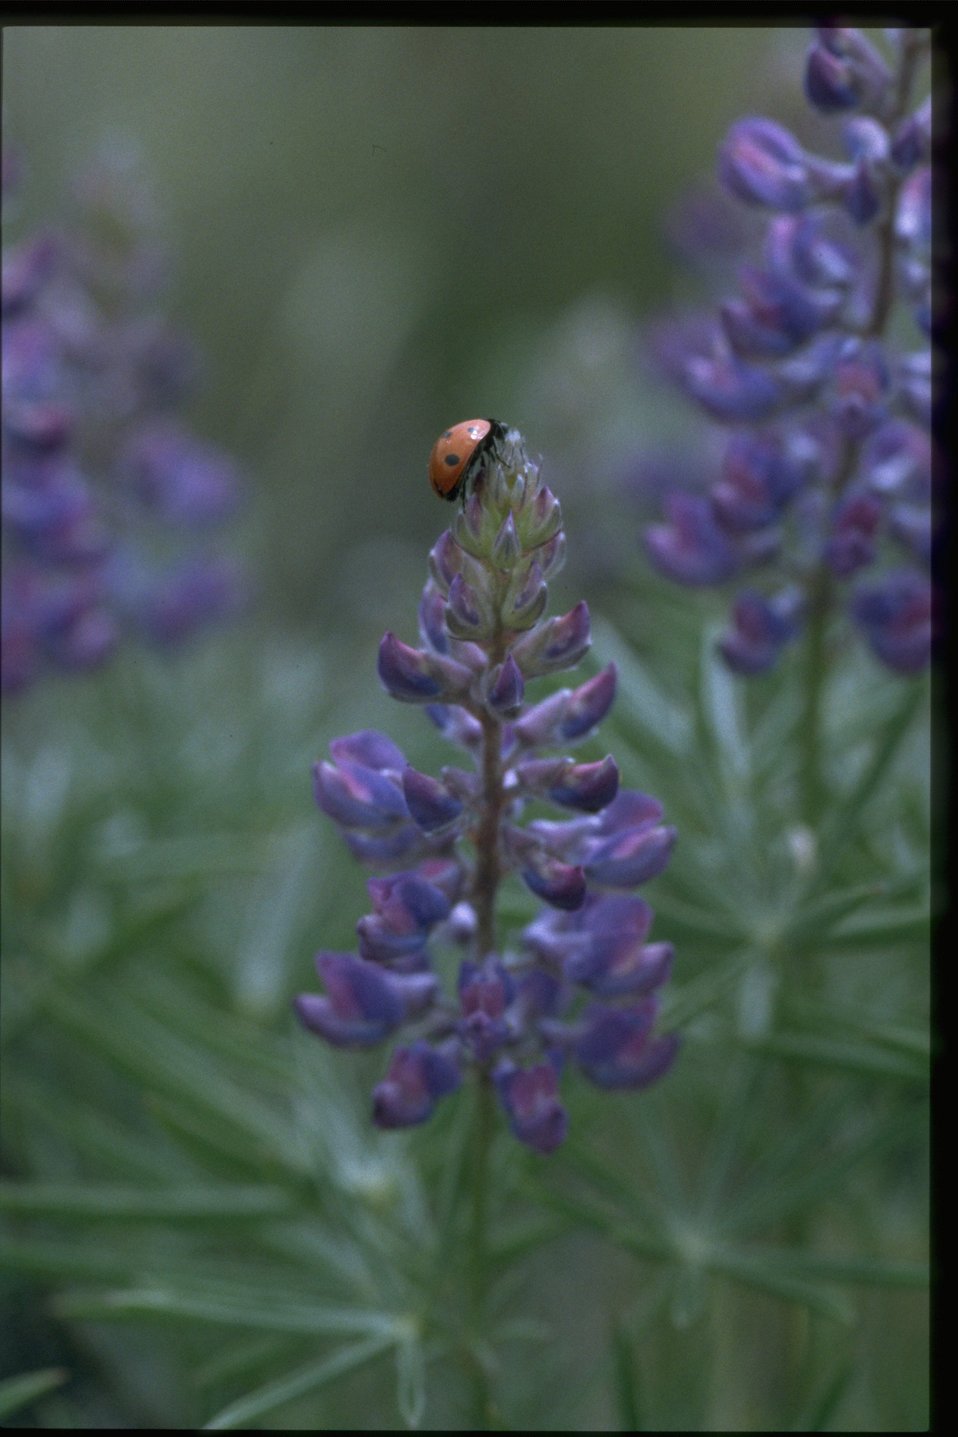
Closeup of tailcup lupine (Lupinus caudatus).